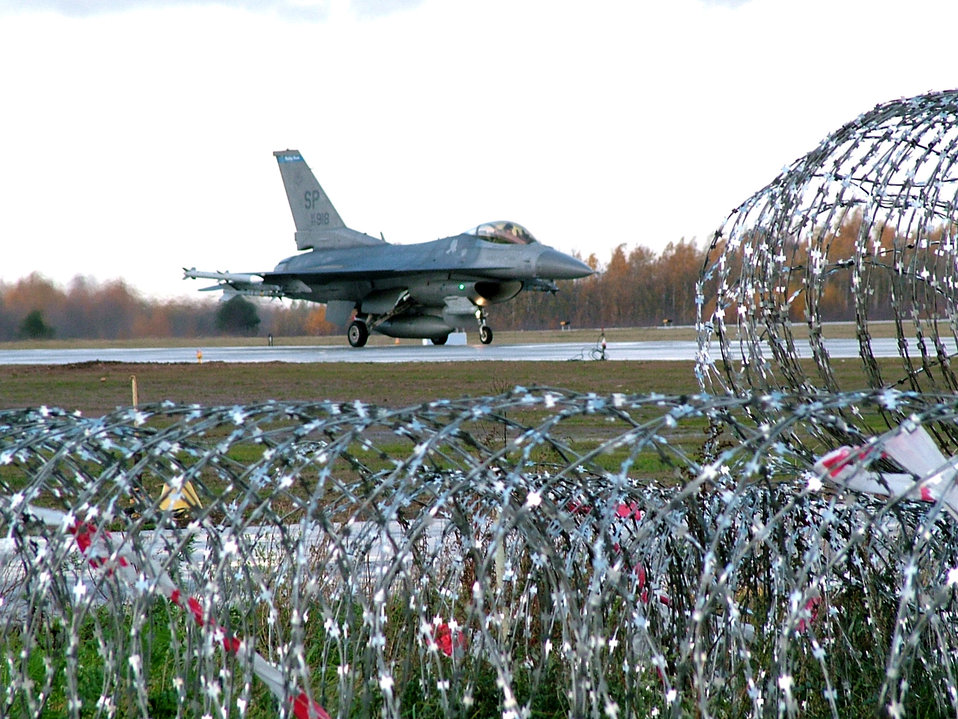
Balkan 'scramble'

SIALULIAI, Lithuania (AFPN) -- Capt. Joey Gaona taxis along the flightline after a training flight here. Captain Gaona is a pilot assigned to the 23rd Expeditionary Fighter Squadron. The 23rd EFS is participating in NATO's Baltic Air Policing mission, providing 24-hour security over the skies of Lithuania, Latvia and Estonia.